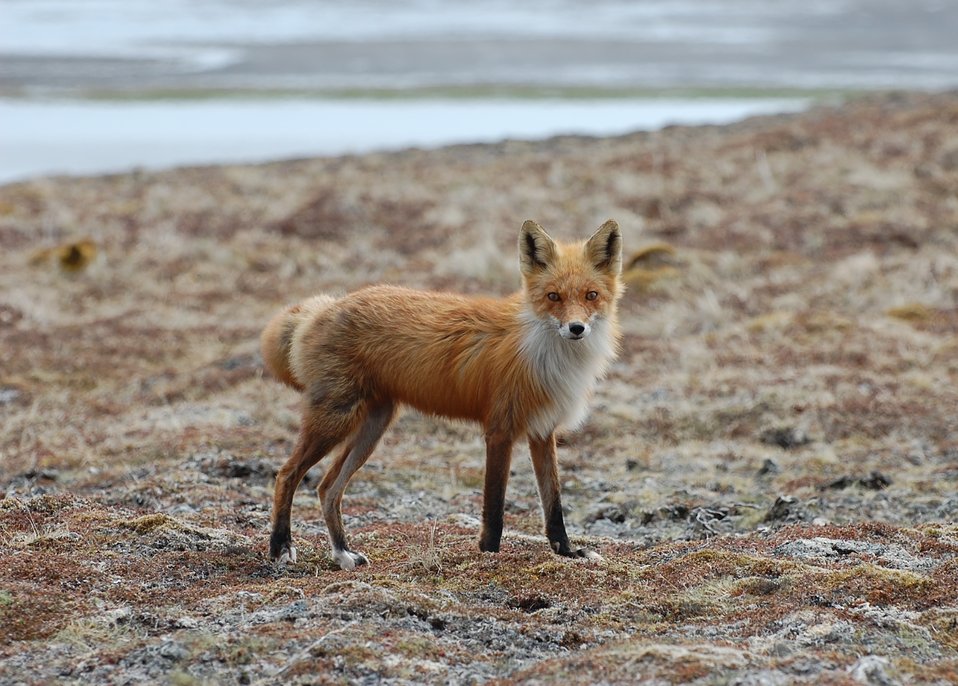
Red Fox

near Kinzarof Lagoon, Izembek National Wildlife Refuge